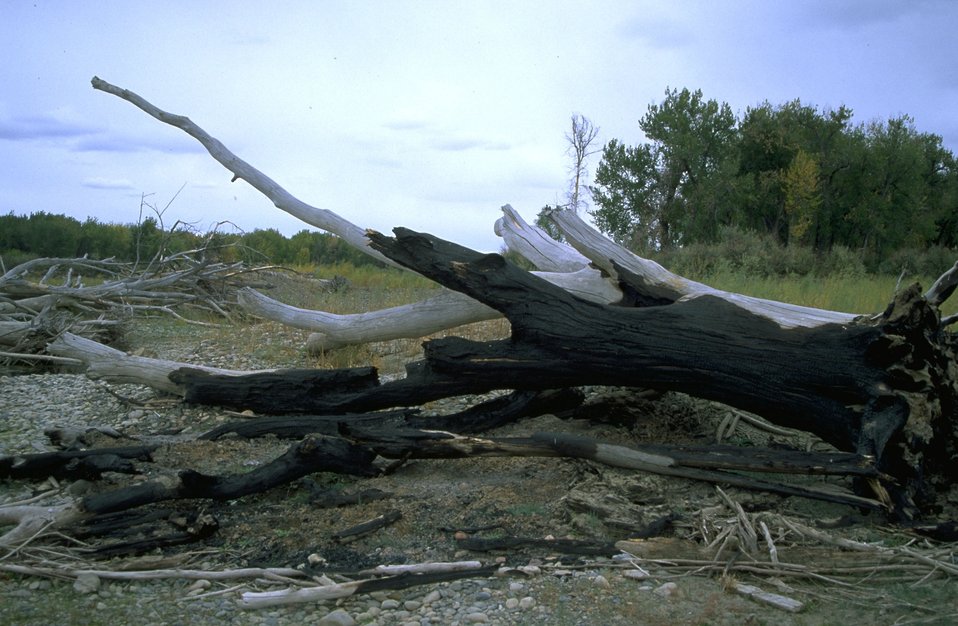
Driftwood on the shore of the Yellowstone River by Howrey Island Recreation Area